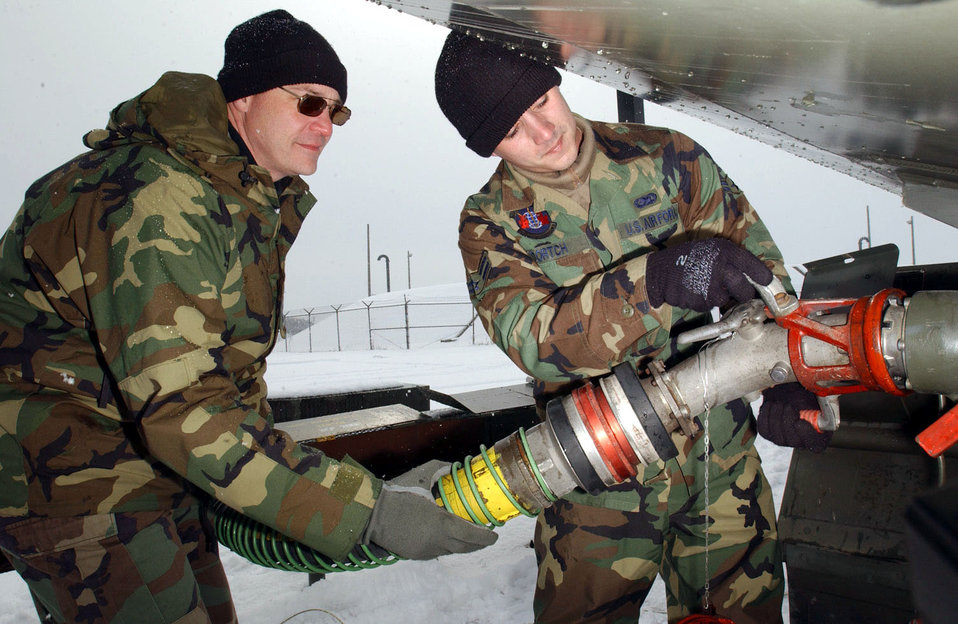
Deploying to snow

KWANG JU AIR BASE, South Korea -- Master Sgt. Ricky Stone (left) and Airman 1st Class Blake Dortch connect a fuel hose during a four-day deployment here. Both airmen are assigned to the 18th Logistical Readiness Squadron at Kadena Air Base, Japan.